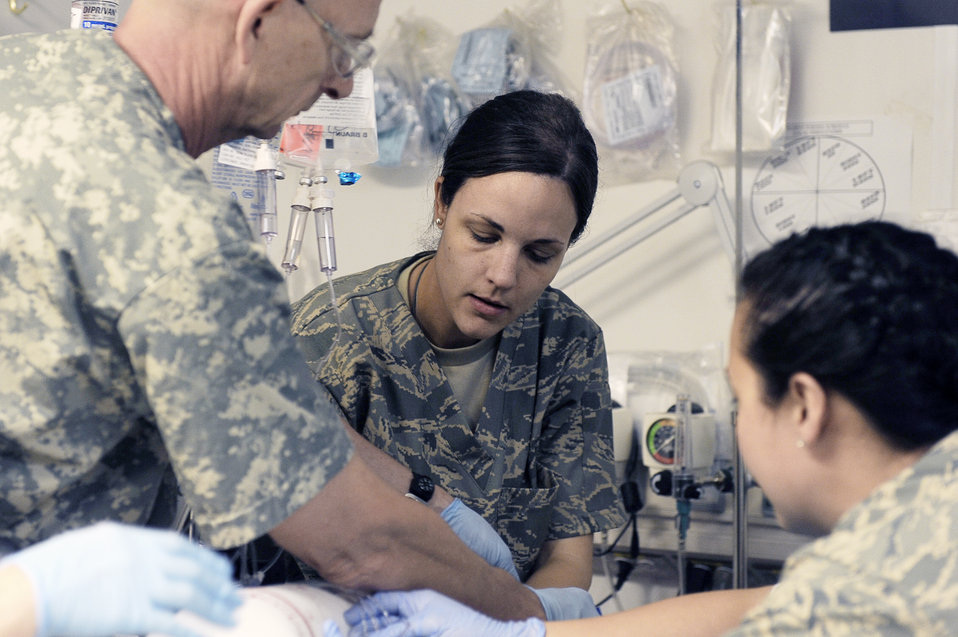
Medical team in Southwest Asia

1st Lt. Erica Horan provides medical assistance for a recovering patient May 5, 2010, at the Craig Joint Theater Hospital at Bagram Airfield, Afghanistan. Lieutenant Horan is with the 455th Expeditionary Medical Group/Task Force Medical East deployed from Travis Air Force Base, Calif.